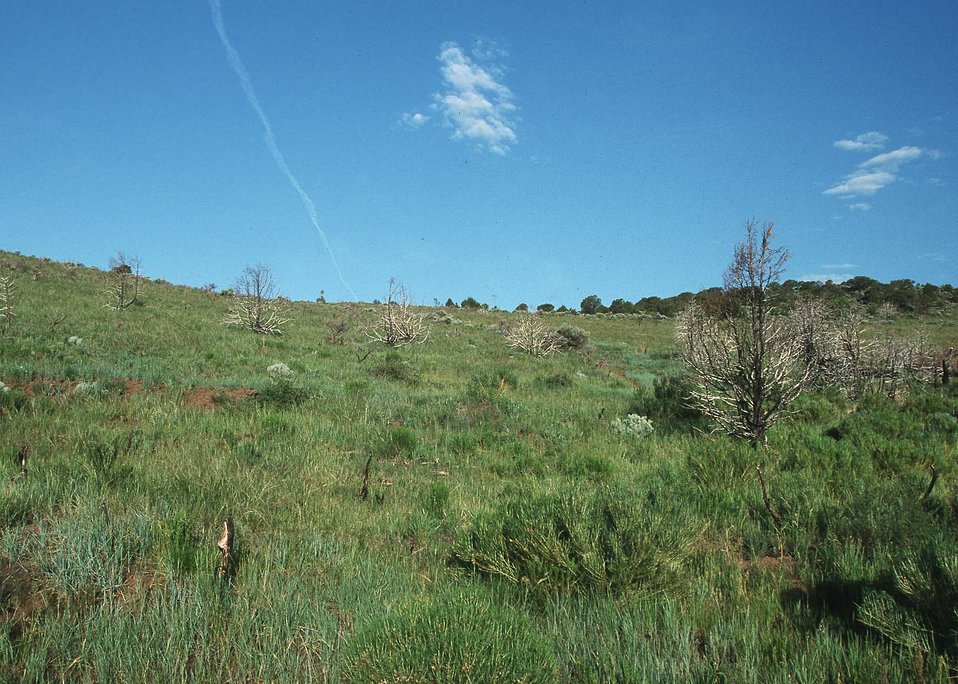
Post-Prescribed Burn vegetation regeneration.